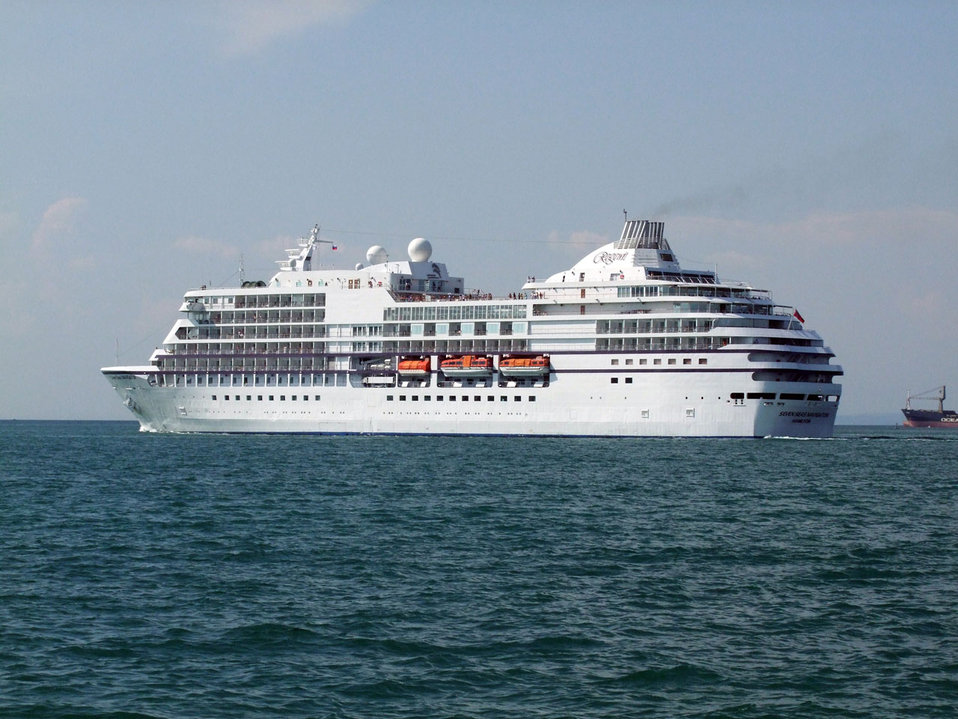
Ship

White sea bride ship.